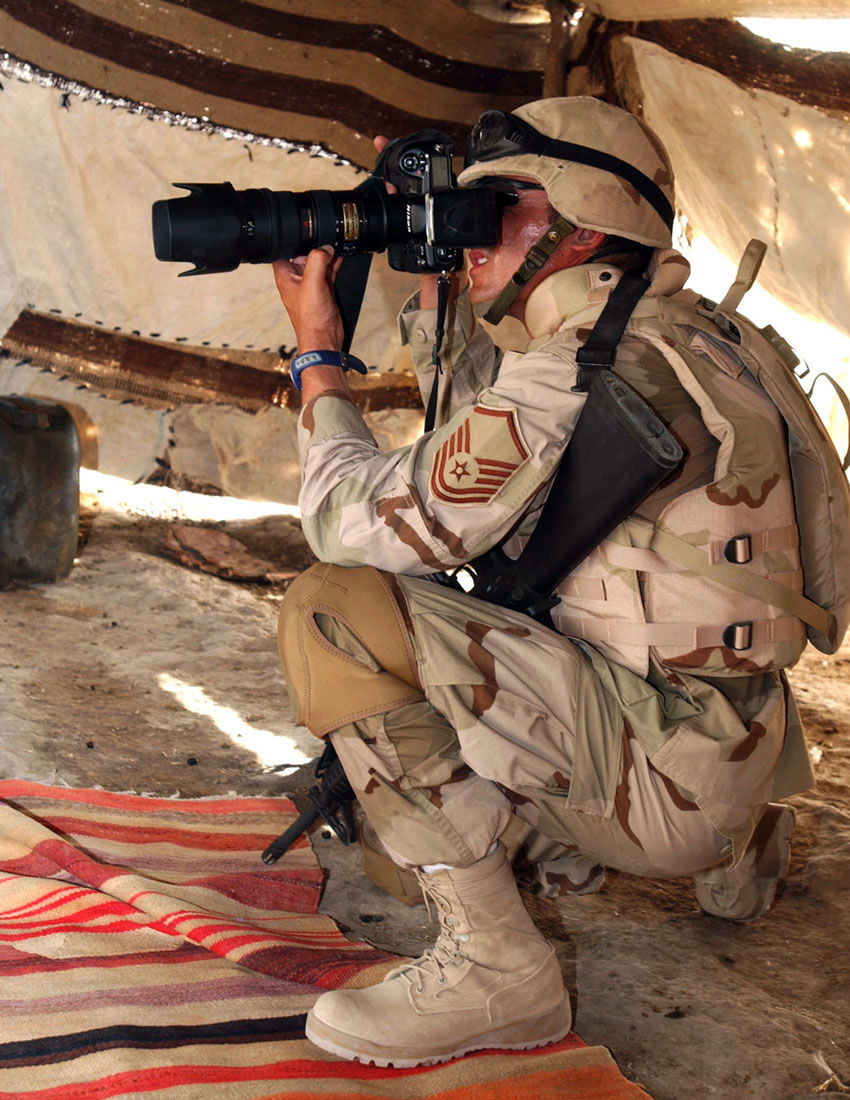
Base photographers document history for future generations

IRAQ -- Master Sgt. Maurice Hessel photographs a security forces mission in the local area outside Ali Base's perimeter. Base photographers document the Air Force mission during peace and war. He is the 407th Expeditionary Communications Squadron base multimedia center manager.